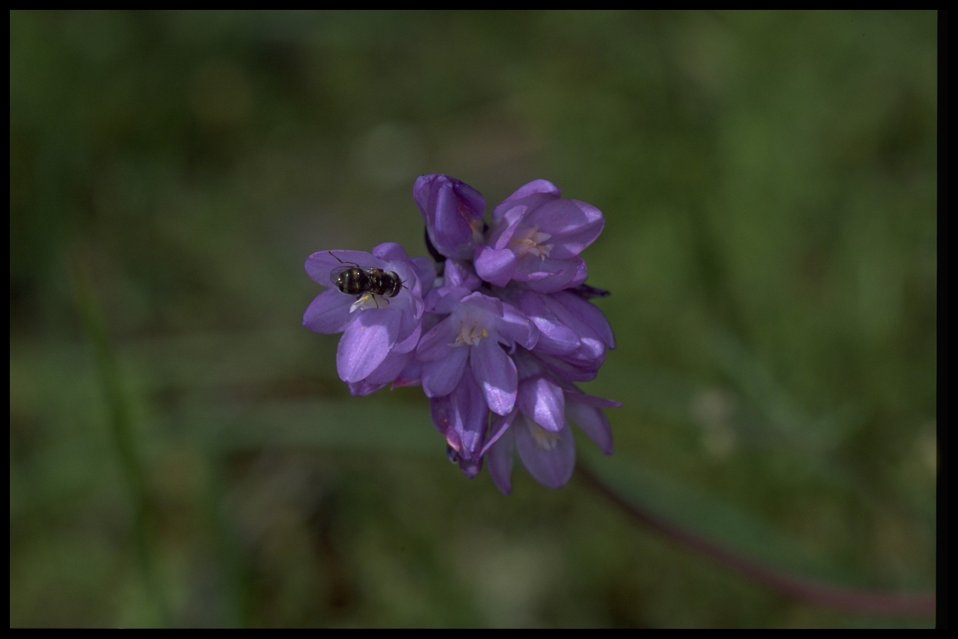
Medium shot of Dichelostemma capitatum.